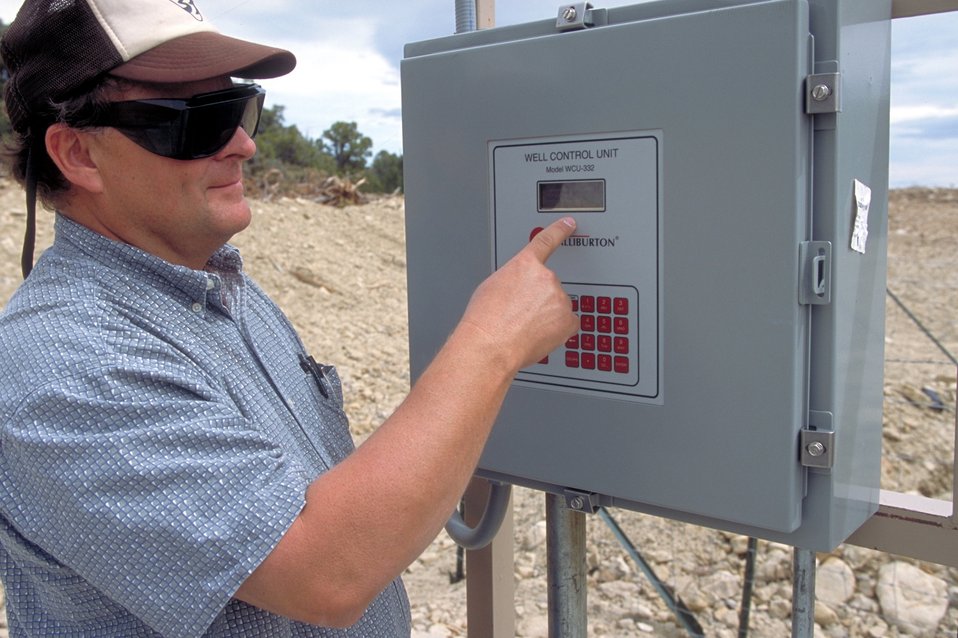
Pump unit producing coal bed methane near Price, Utah.